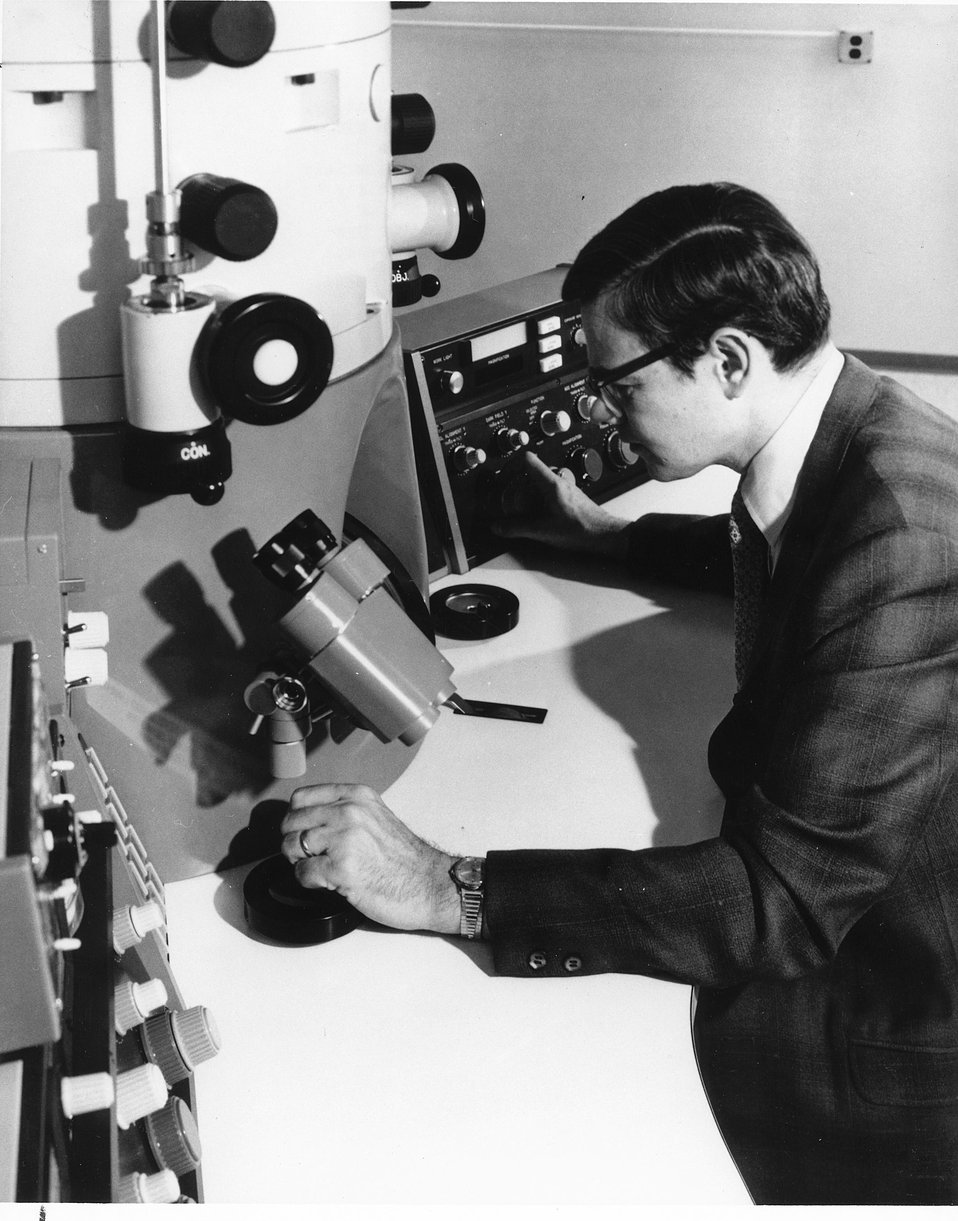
A Hanford Engineering Development Laboratory scientist adjusts controls on the million volt electron microscope. The instrument is used for materials studies in support of the Fast Flux Test Facility under construction near Richland, Wash. c. 1972